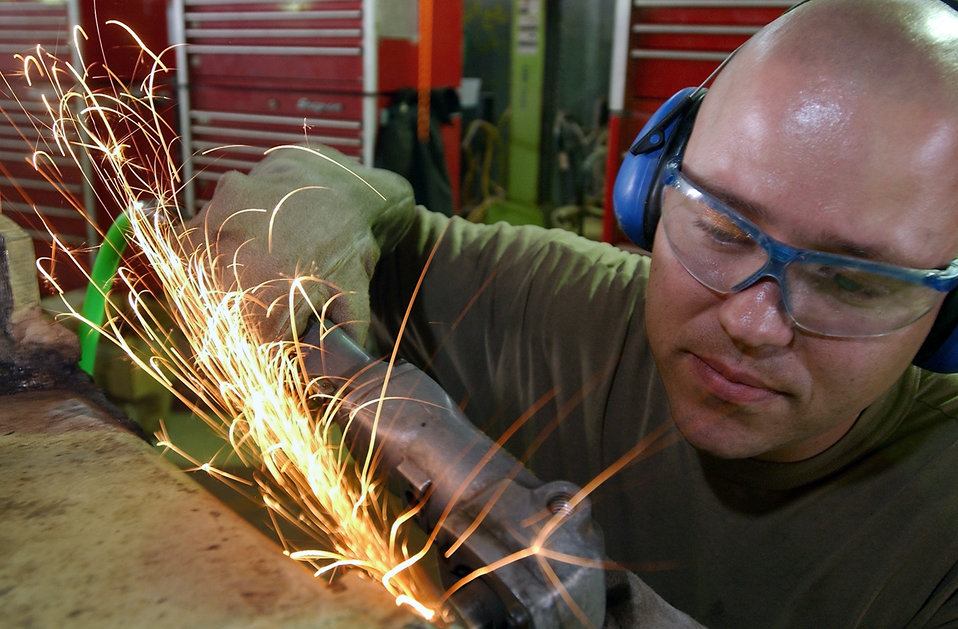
Let the sparks fly

BALAD AIR BASE, Iraq -- Staff Sgt. Clinton Miller cleans a weld with a grinder while repairing the front of a forklift. He is a vehicle maintenance specialist here and is deployed from Elmendorf Air Force Base, Alaska.